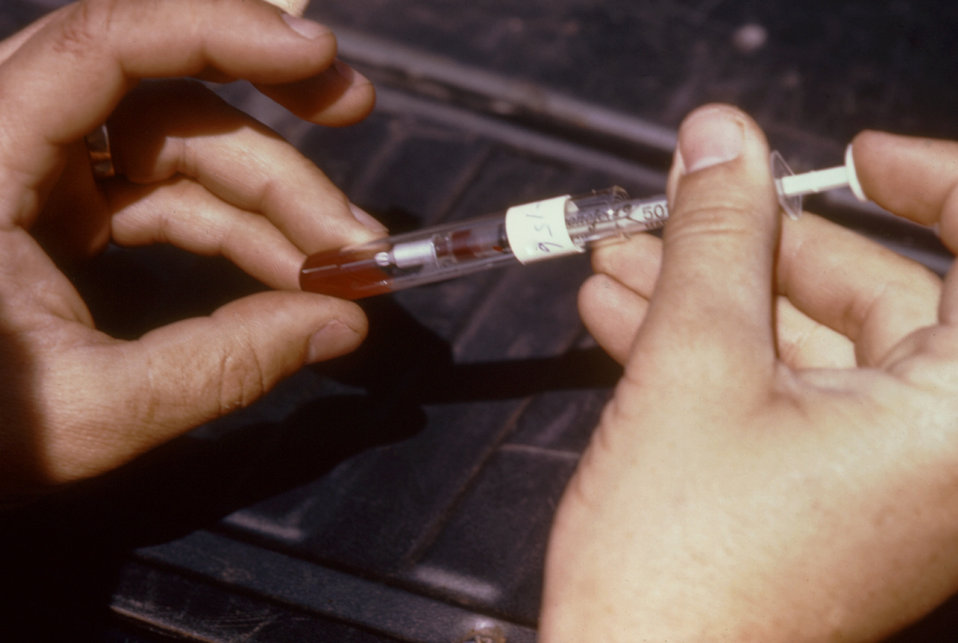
This technician is discharging a vertebrate blood sample from a syringe into a test tube to be tested later for arbovirus.